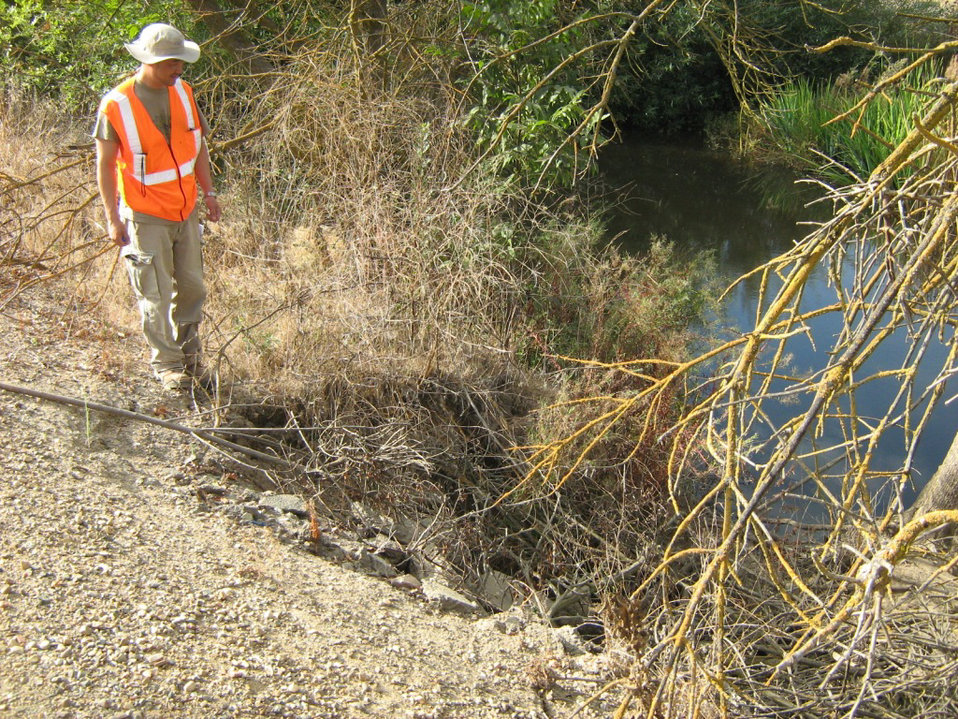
Levee erosion in the Stockton area

Levee erosion in the Stockton, Calif., area, shown during a levee inspection in 2010. The U.S. Army Corps of Engineers inspects levees in its Rehabilitation and Inspection Program to ensure levees don’t pose an unacceptable risk to lives and to provide levee managers and residents with detailed information on the condition of levees to help them make informed decisions about safety.